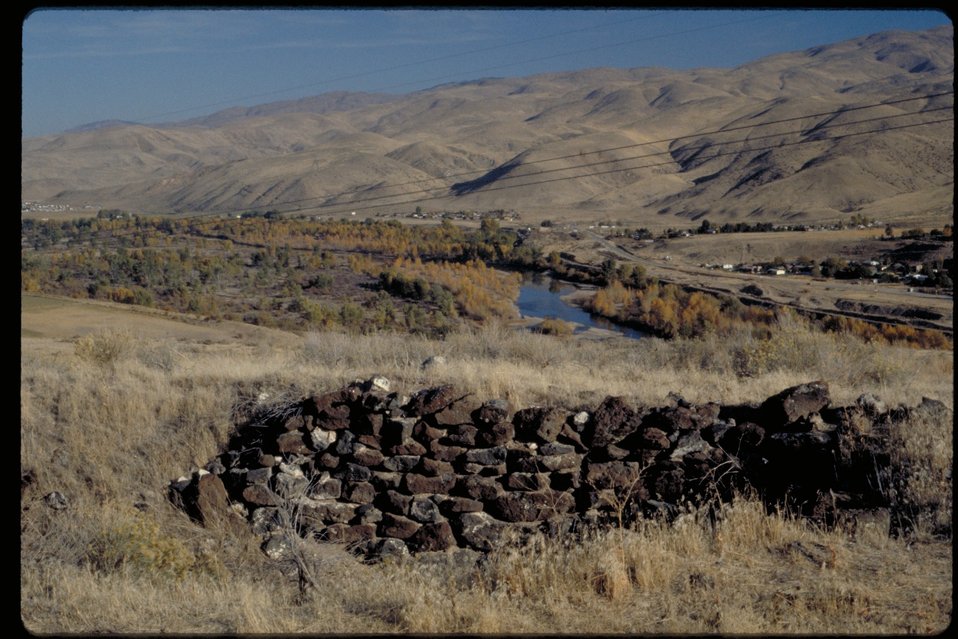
Possible Stage Station South of Boise Oregon Trail Lower Snake River District